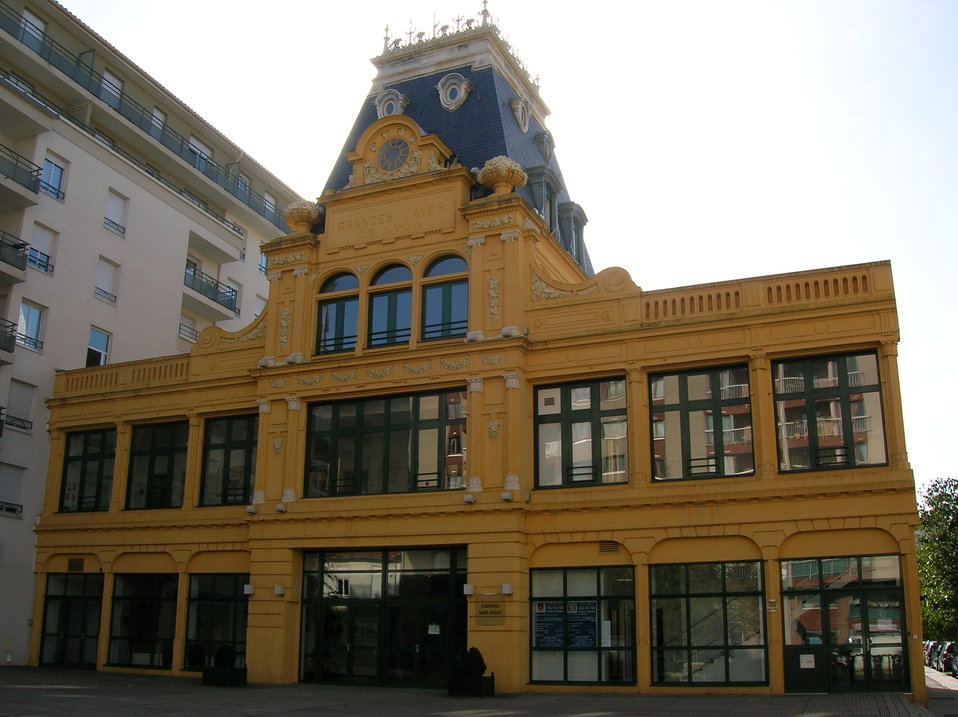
Fran√ßais†: Ch√¢teau Sans-Souci, in Lyon (France)